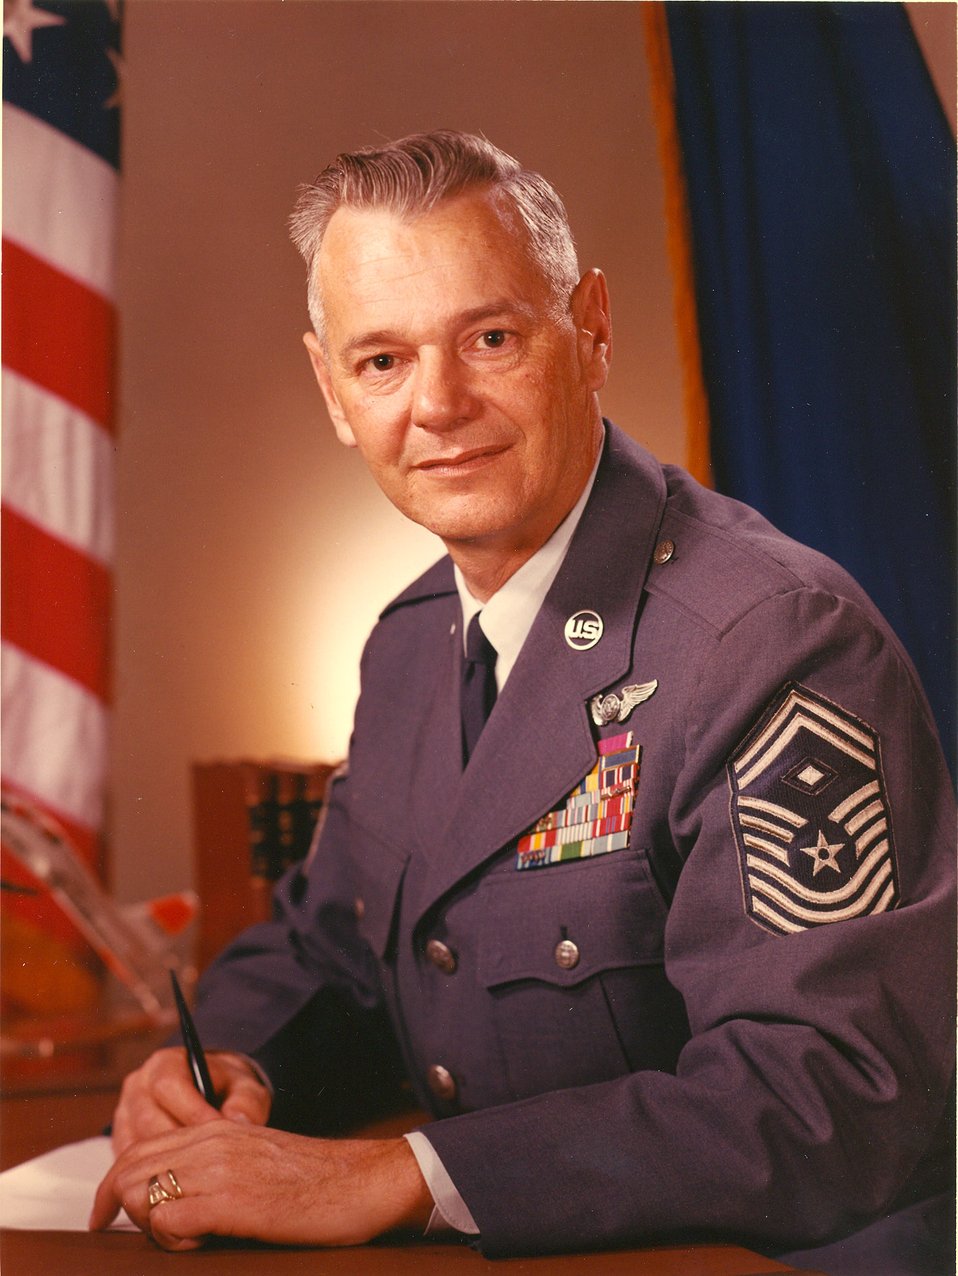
Enlisted perspective remembers the 'first'

Chief Master Sgt. Paul Airey was selected as the first chief master sergeant of the Air Force on April 3, 1967. During his tenure he visited many bases and talked with many Airmen about improving conditions for the enlisted force.